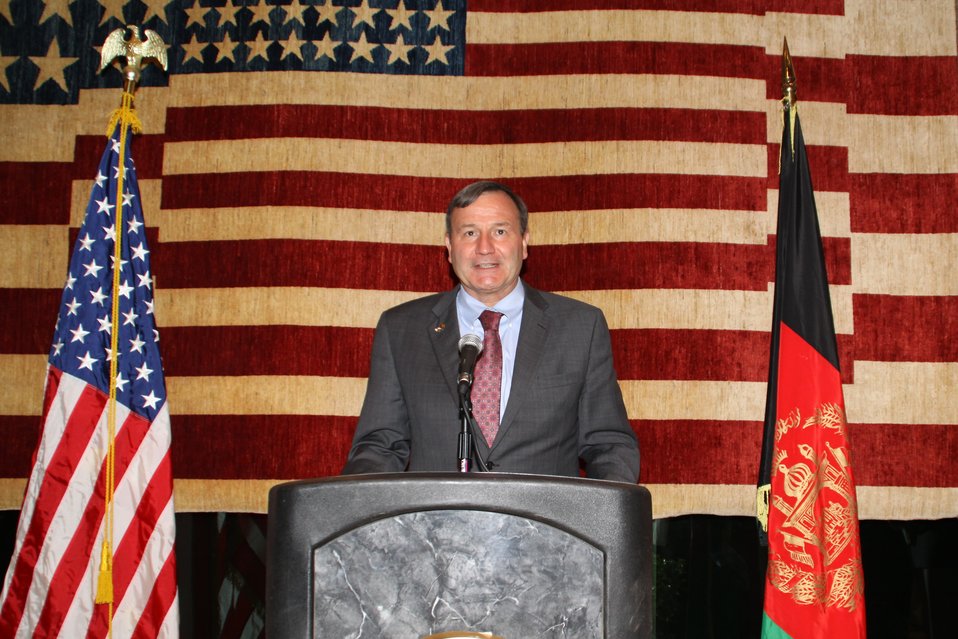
US Embassy Town Hall July 21, 2010